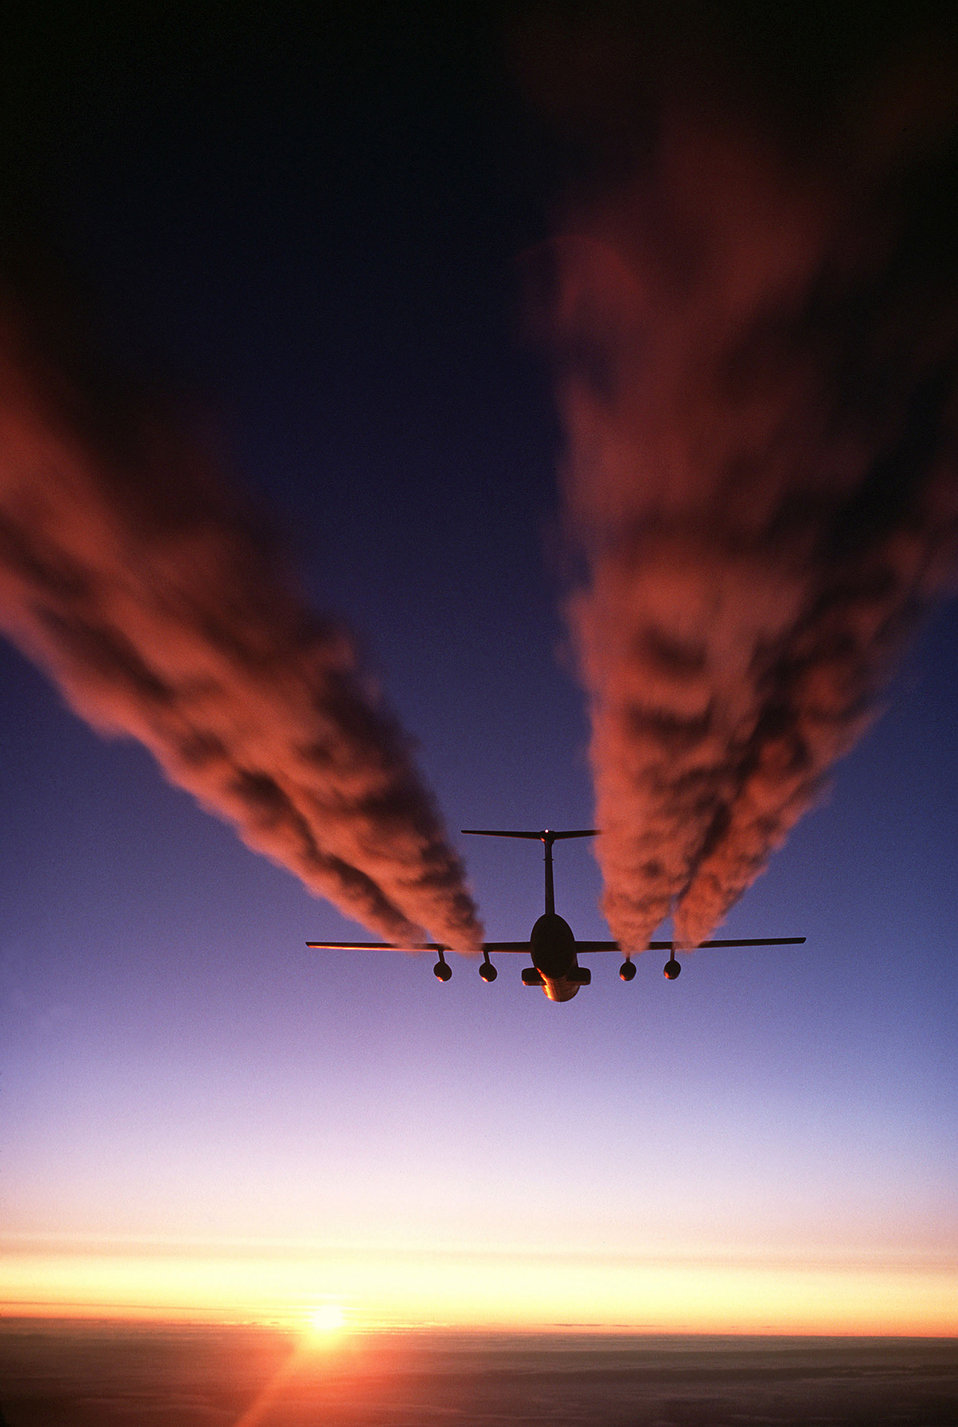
Deep freeze

OVER ANTARCTICA -- A C-141B Starlifter aircraft leaves four plumes of exhaust behind it as it prepares for an airdrop during Operation Deep Freeze.